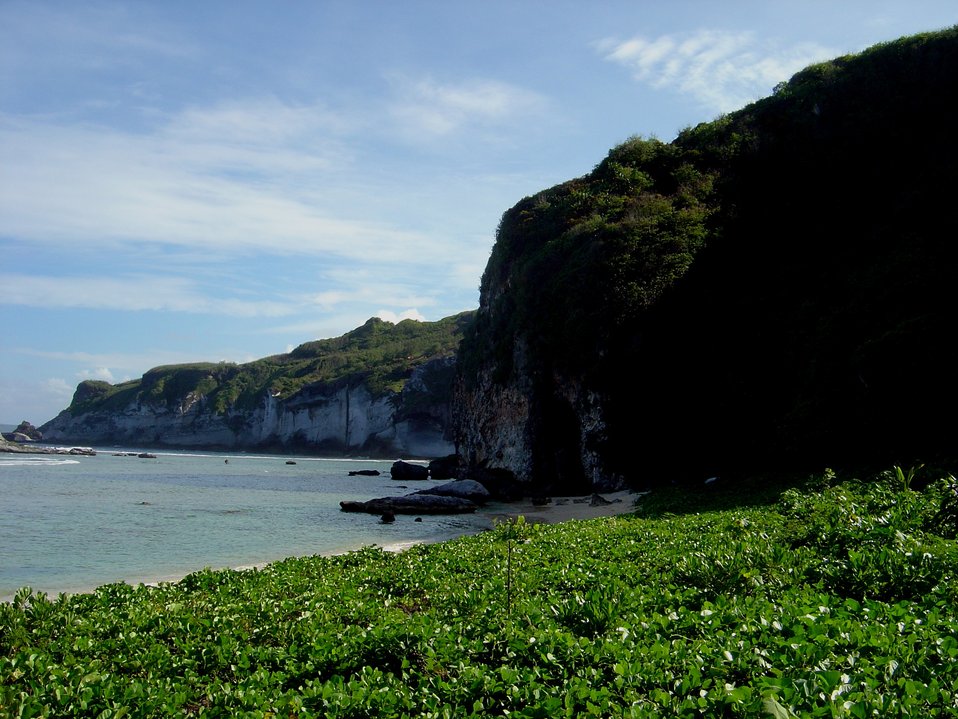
Coast near Bird Island, Saipan.